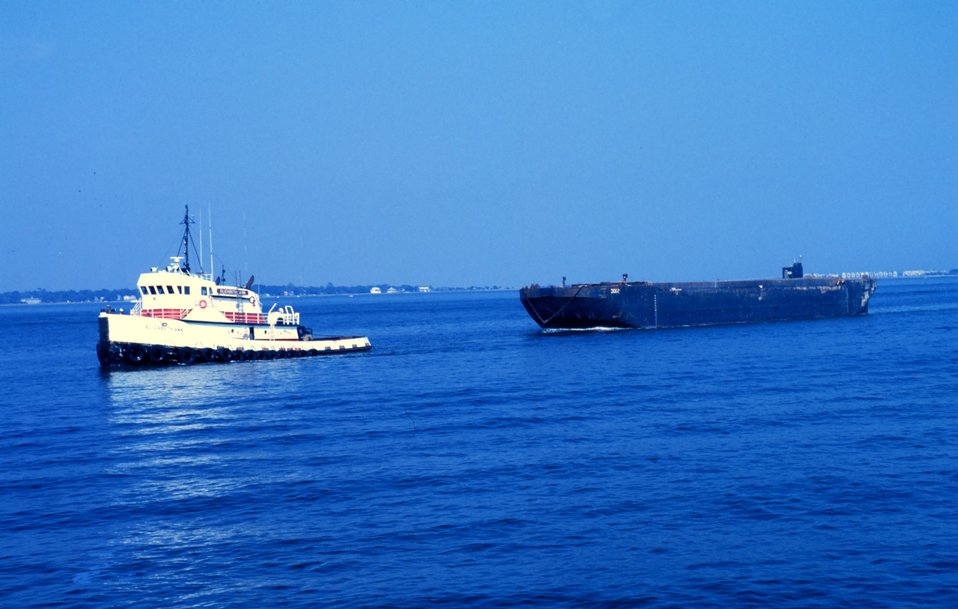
A seagoing tug towing a barge in Charleston Harbor.